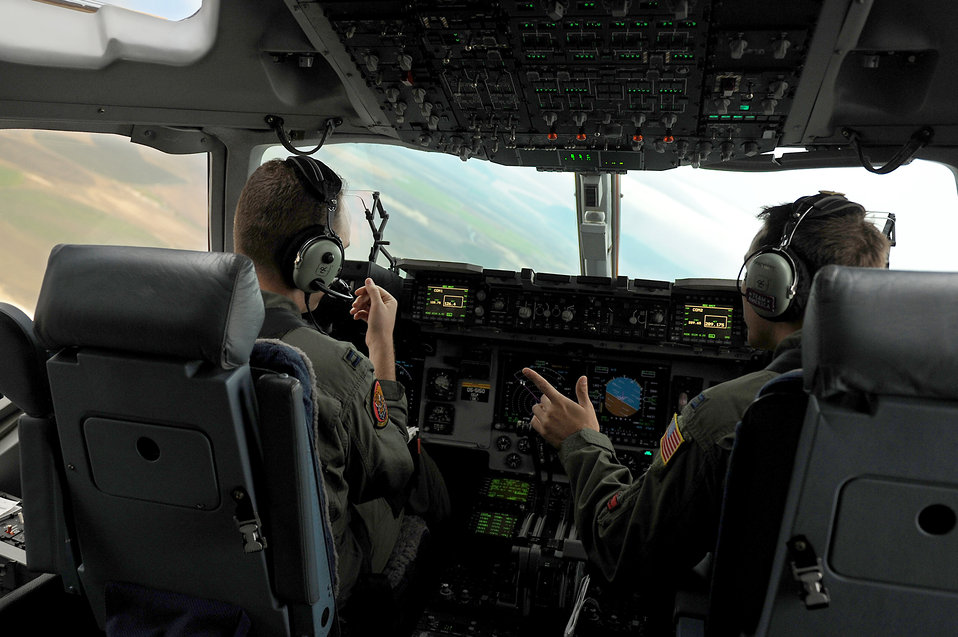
Aircrews provide training for weapons school

Pilots from the 535th Airlift Squadron fly a C-17 Globemaster III toward a drop zone during an airdrop training mission Nov. 18, 2010 at Nellis Air Force Base, Nev. The 535th AS aircrew trained in unrestricted descent assault landings, airdrop, combat offloads, air refueling, night vision goggle training, combat offloads, low levels, mountainous terrain, assault landings, threat responses and multiple ship formation training during a five-day training trip to Washington Nov 12 to 17 and participated in the Mobility Air Forces Exercise at Nellis AFB.